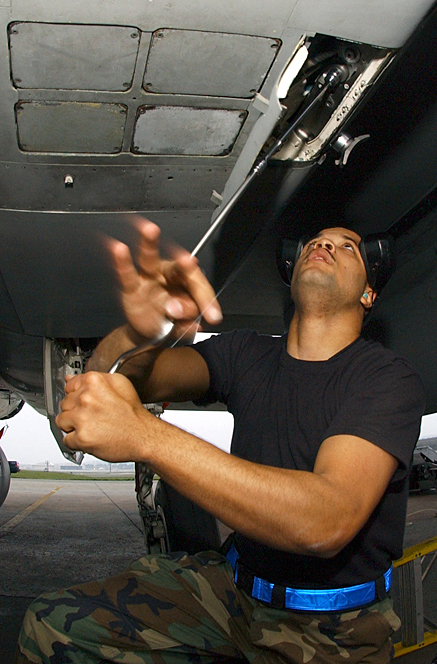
For the win

KADENA AIR BASE, Japan (AFPN) -- Senior Airman Jason Robinson makes preparations on an F-15C Eagle in order to load munitions Jan. 27. Airmen competed in a load crew competition Jan. 27. The load crew competition evaluates the Airmen's timeliness and accuracy of loading munitions. Airmen Robinson is a weapons load crew with the 44th Aircraft Maintenance Squadron.